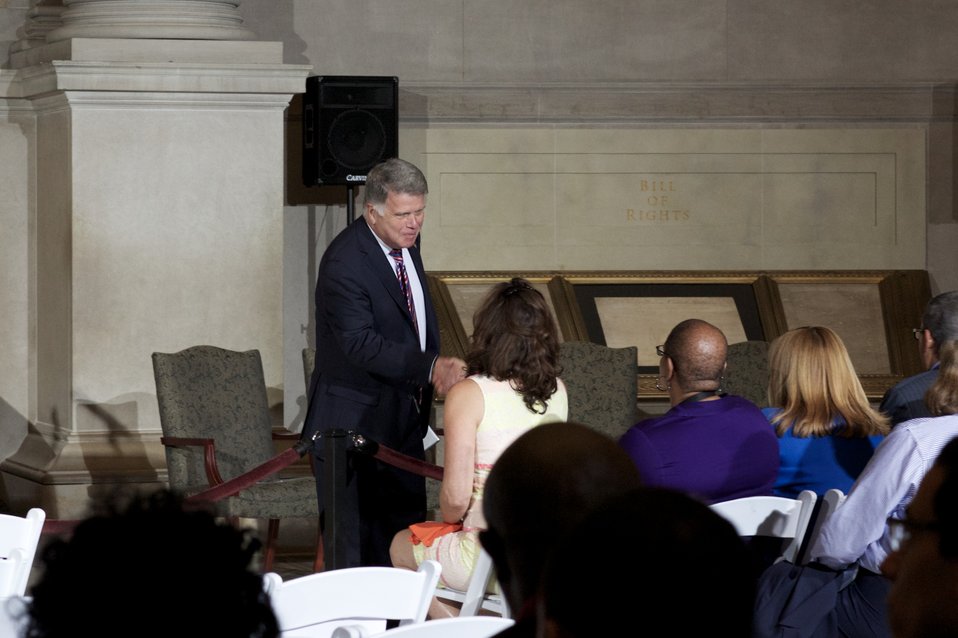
Naturalization Ceremony with Michelle Obama